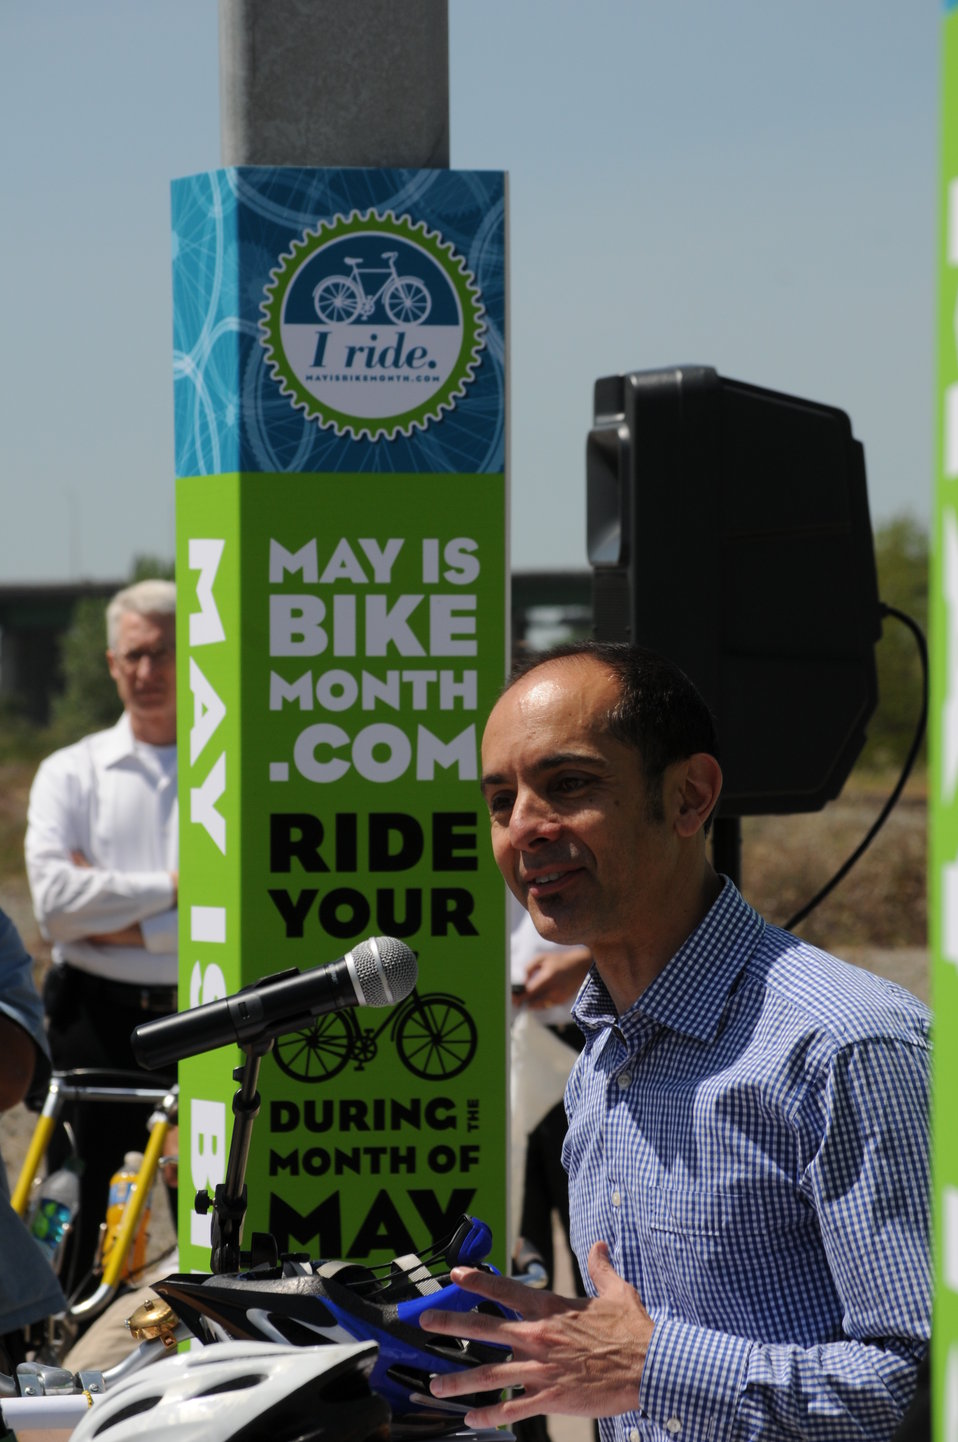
Sacramento District - 2011 bike friendly workplace

SACRAMENTO, Calif. -- West Sacramento mayor Christopher Cabaldon challenges Sacramento cyclists to log more than two million miles in the month of May, double the challenge of past years, at a May is Bike Month kickoff event here May 2.

“Last year, over 6,000 bicyclists logged 1.3 million miles, so yeah, we can hit that mark,” said Cabaldon. “If every one of us in this region just logged one mile, we can easily hit that mark.”